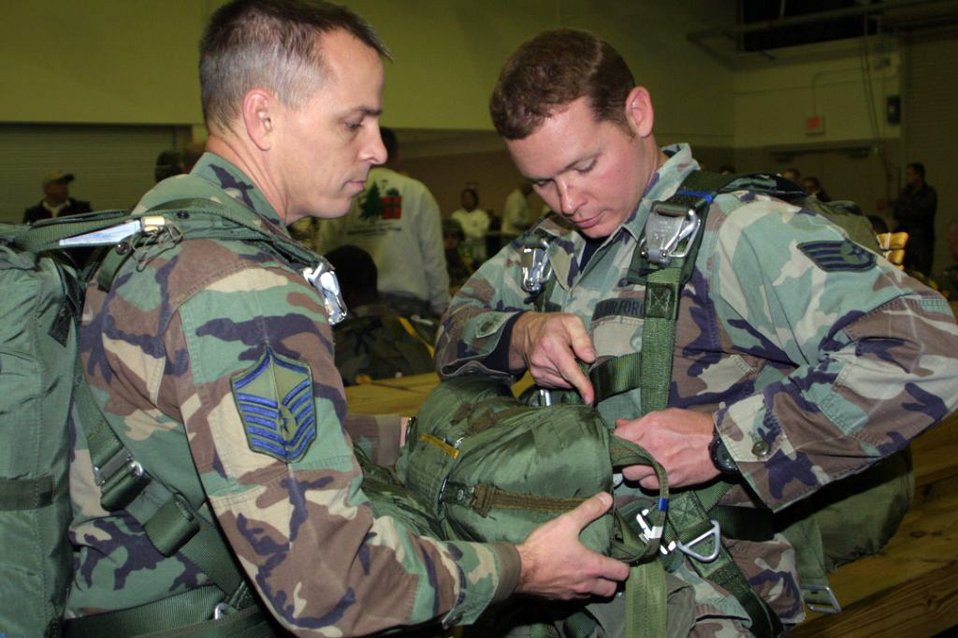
Enlisted TACP control close air support

Staff Sgt. Robert Callaway prepares for a jump at Pope Air Force Base, N.C. He is with the 18th Air Support Operations Group.